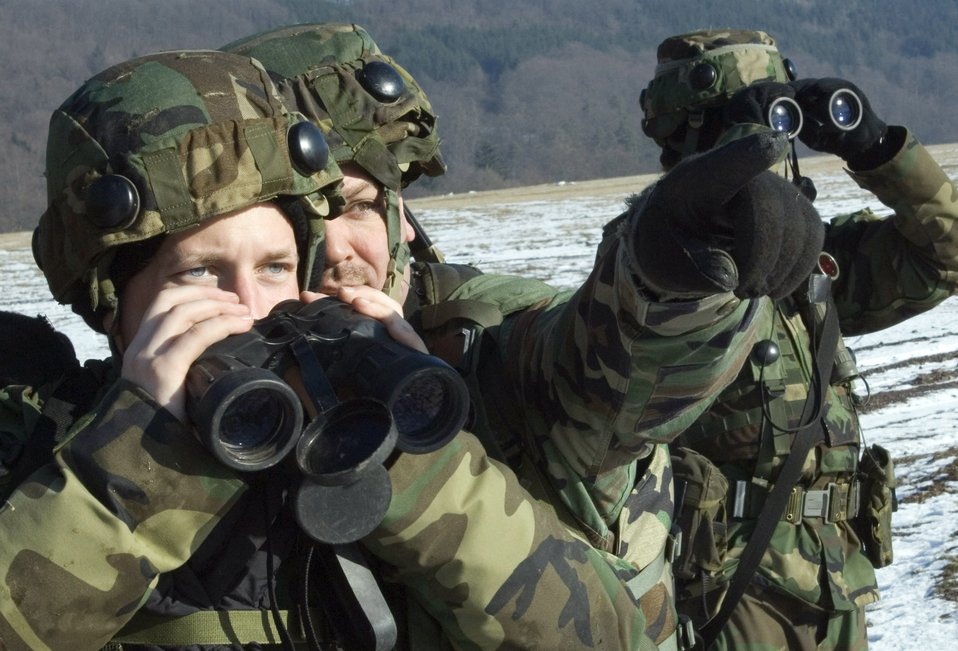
Creek Defender

BAUMHOLDER, Germany (AFPN) -- Tech. Sgt. Gregory Marchand points out targets to Staff Sgt. Timothy Ogan during Creek Defender in southwestern Germany earlier this month. The Airmen are security force specialists with the 52nd Security Forces Squadron at Spangdahlem Air Base, Germany.